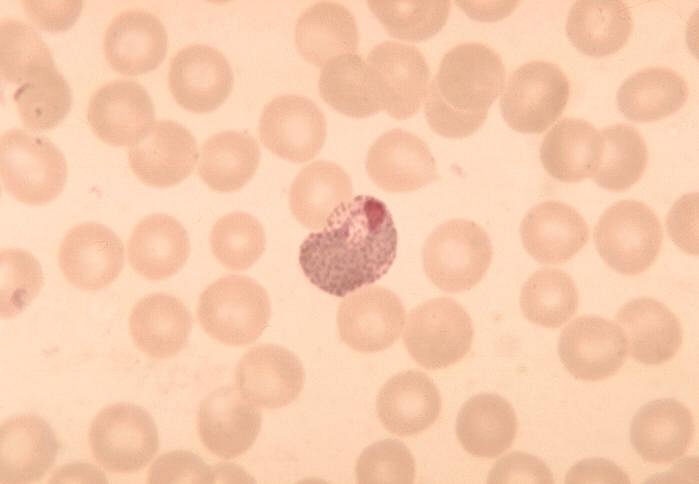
Plasmodium vivax mature trophozoite.